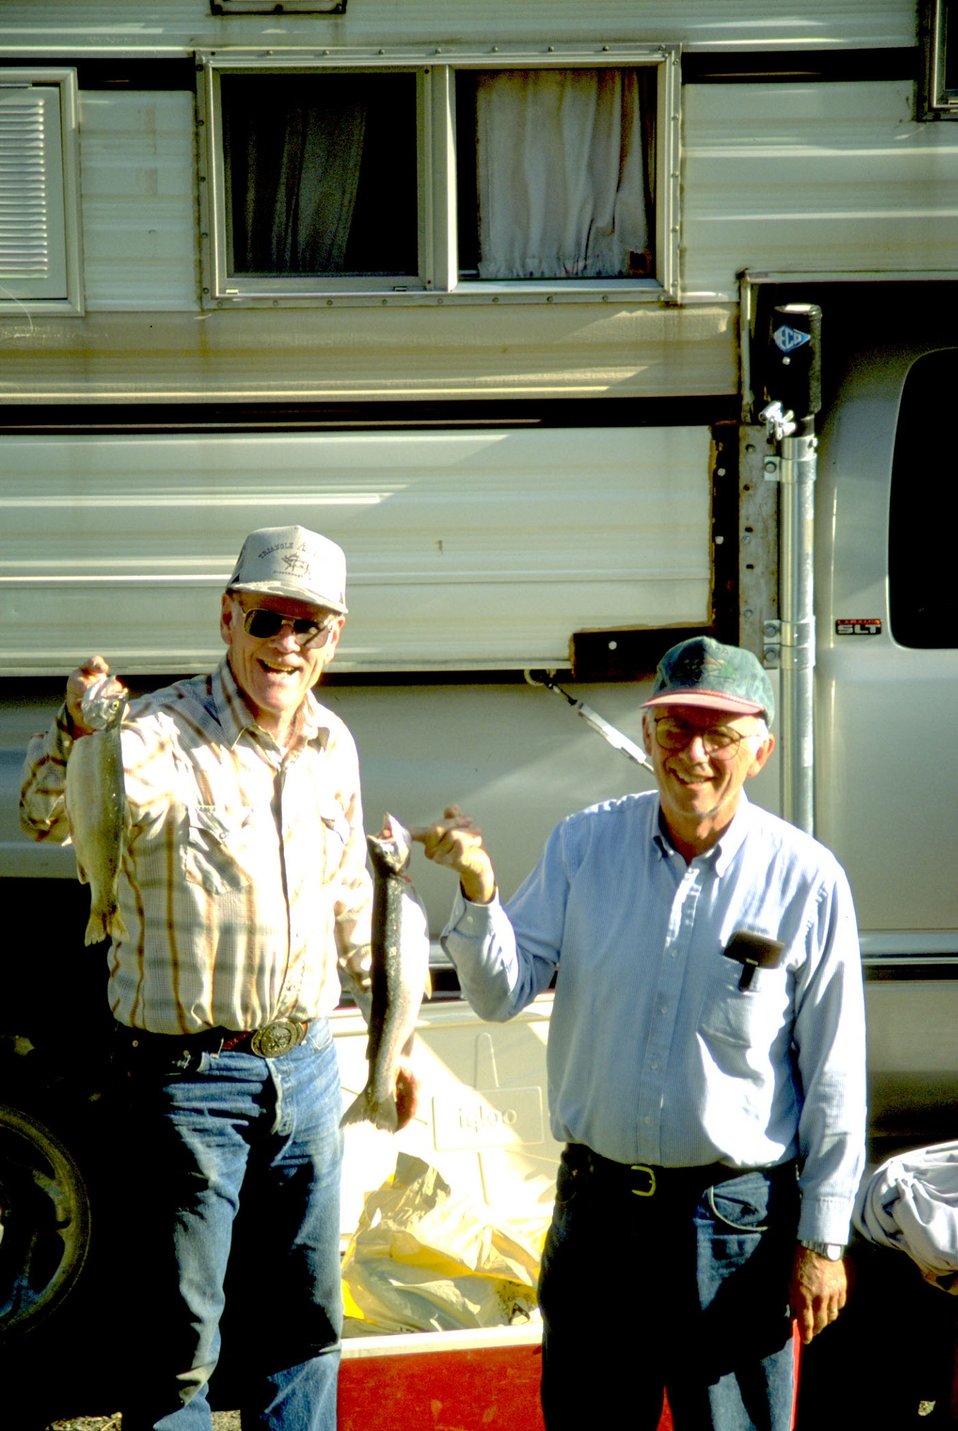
Two guys with fish near motor home